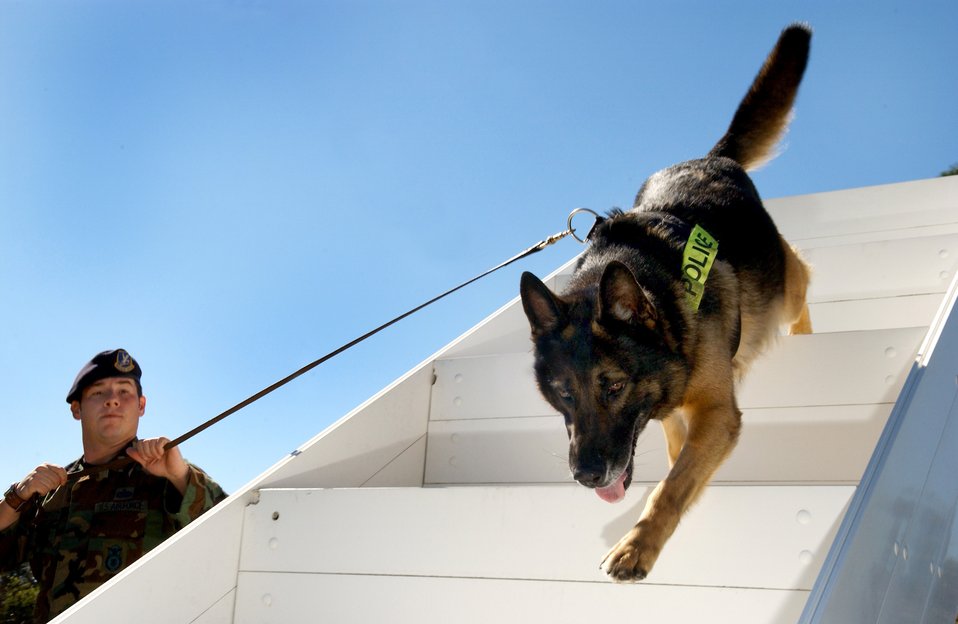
For the dogs

MACDILL AIR FORCE BASE, Fla. (AFPN) -- Staff Sgt. Timothy Bellus guides his detection patrol dog, Manzo, over a set of stairs Jan. 31. The stairs are part of a confidence course to help train the dogs to adapt to different situations. Sergeant Bellus is a military working dog handler with the 6th Security Forces Squadron.